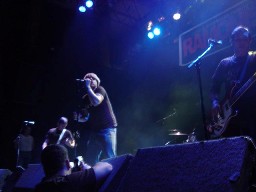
The Nude Pube Banglers